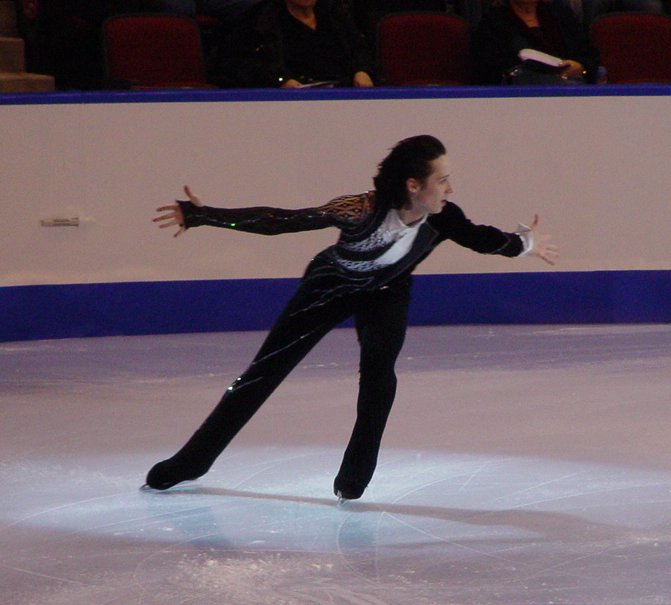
en:Johnny Weir performing a back crossover.